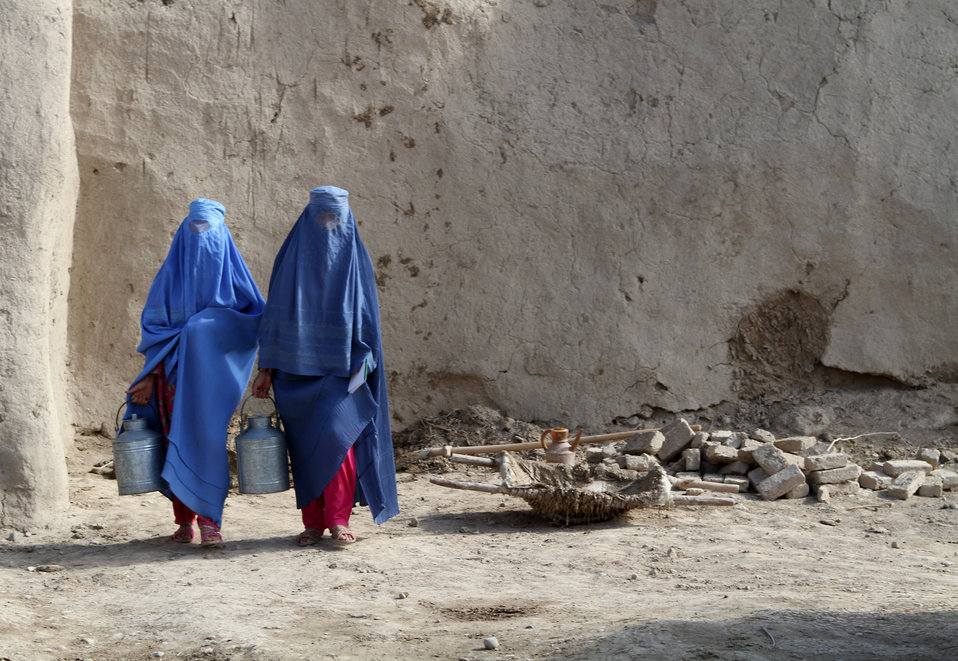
USAID funded Milk Processing Center